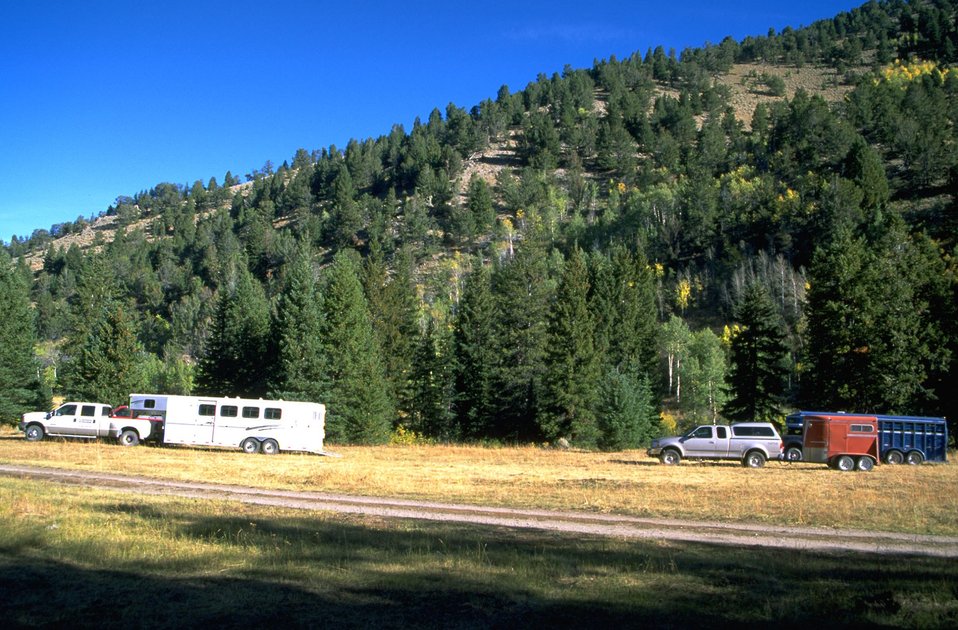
Two pickups and horse trailers below mountain hillside